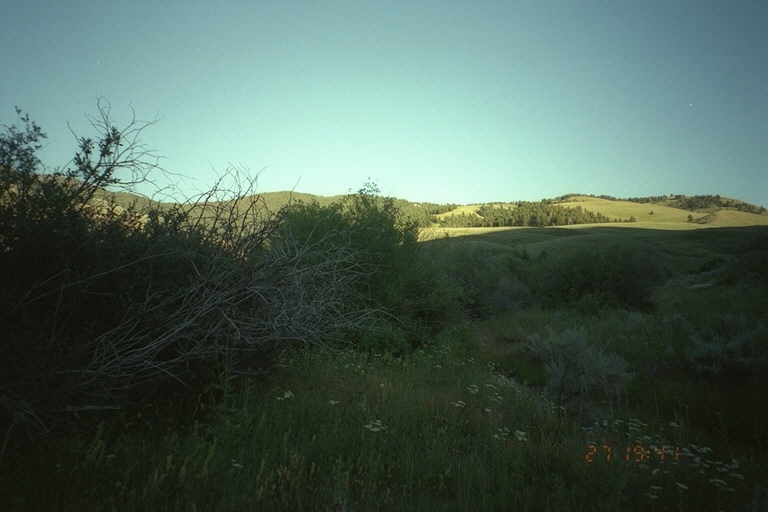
Riparian area Public Lands Salmon Field Office UCSC Upper Columbia Salmon Clearwater District